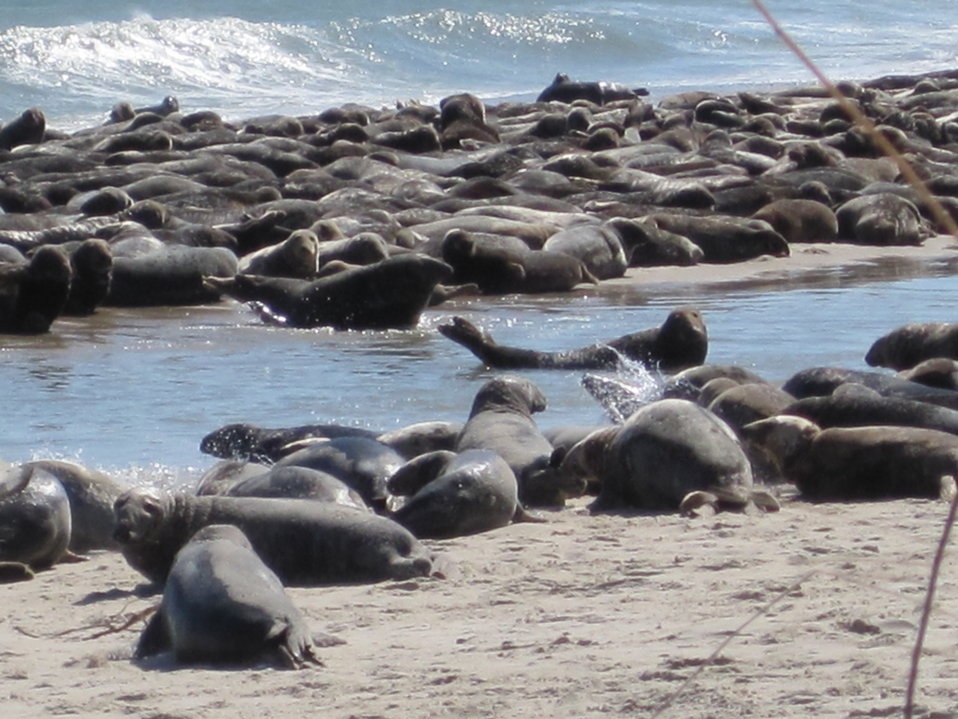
Seals on South Monomoy Island

Seals gather on South Monomoy Island, a few hundred yards from the lighthouse.

Credit: Keith Shannon/USFWS

Monomoy National Wildlife Refuge is part of the Eastern Massachusetts National Wildlife Refuge Complex.